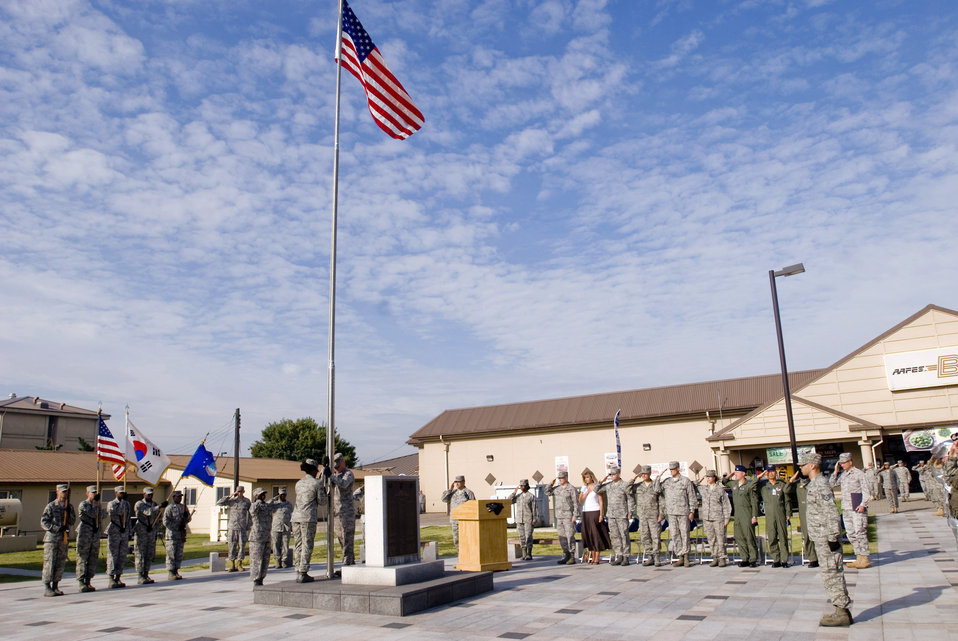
Rembering those who have fallen

Servicemembers and guests salute the U.S. flag during the September 11 Patriot Day Ceremony Sept. 11, 2009, at Kunsan Air Base, Republic of Korea. The ceremony acknowledged the courageous firefighters, police officers, emergency responders and others who risked their lives to save the victims of the tragic events of Sept. 11, 2001. The ceremony also paid tribute to the men and women of the U.S. Armed Forces who have served in the military, whether deployed or at home station, since these events.